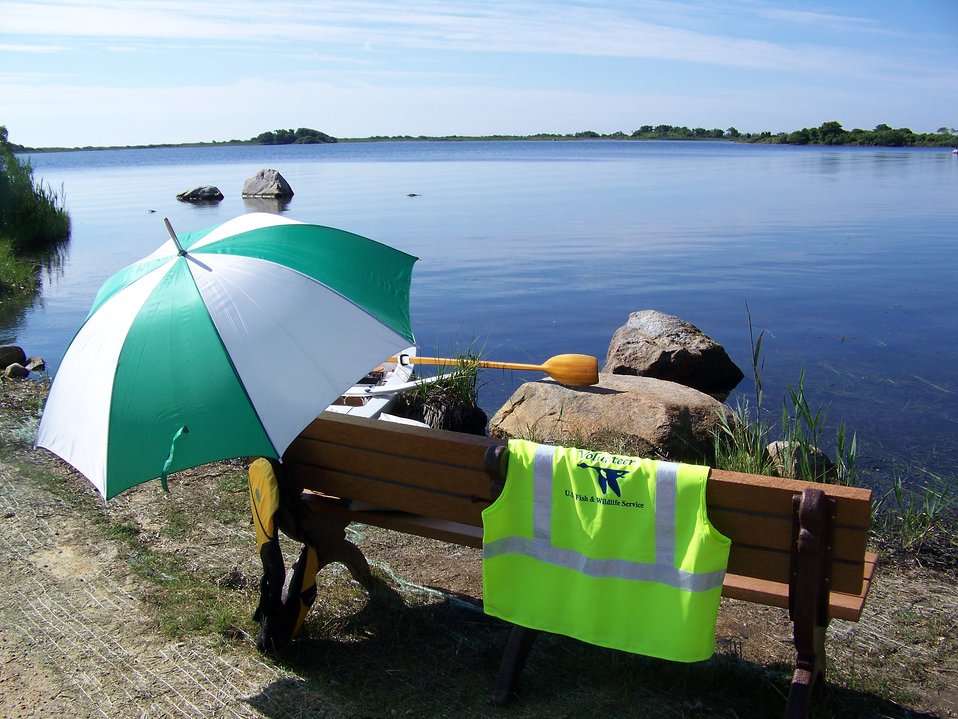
Kayak launch

Ninigret National Wildlife Refuge, RI.